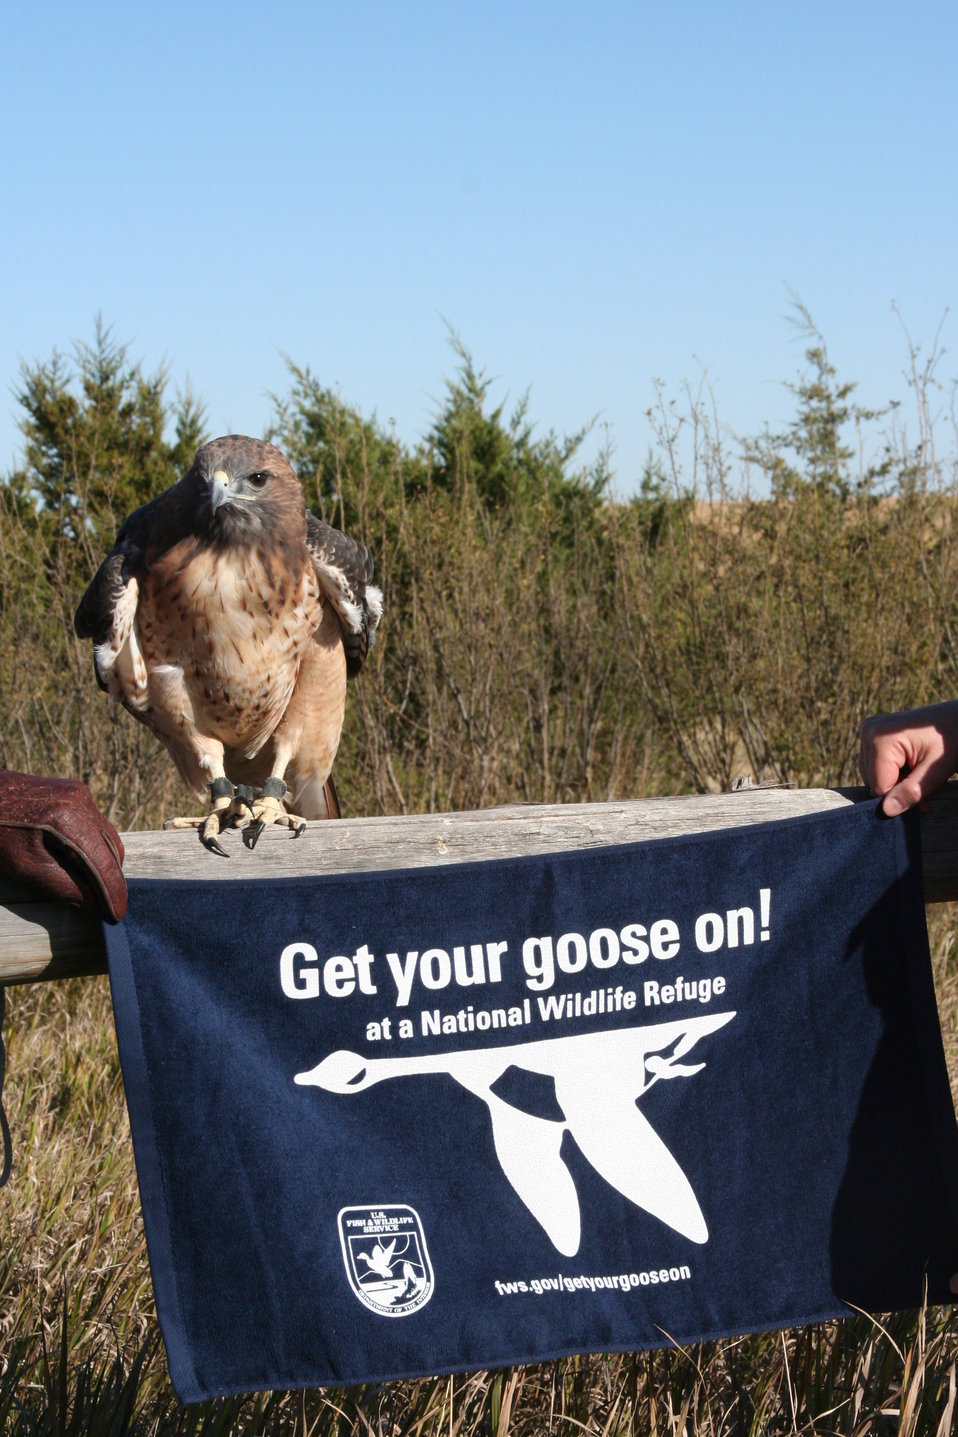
Get Your Goose On! - Raptor Style!

During Huron Wetland Management District's 2012 Prairie Festival, visitors were treated to an up close and personal look at various birds of prey.